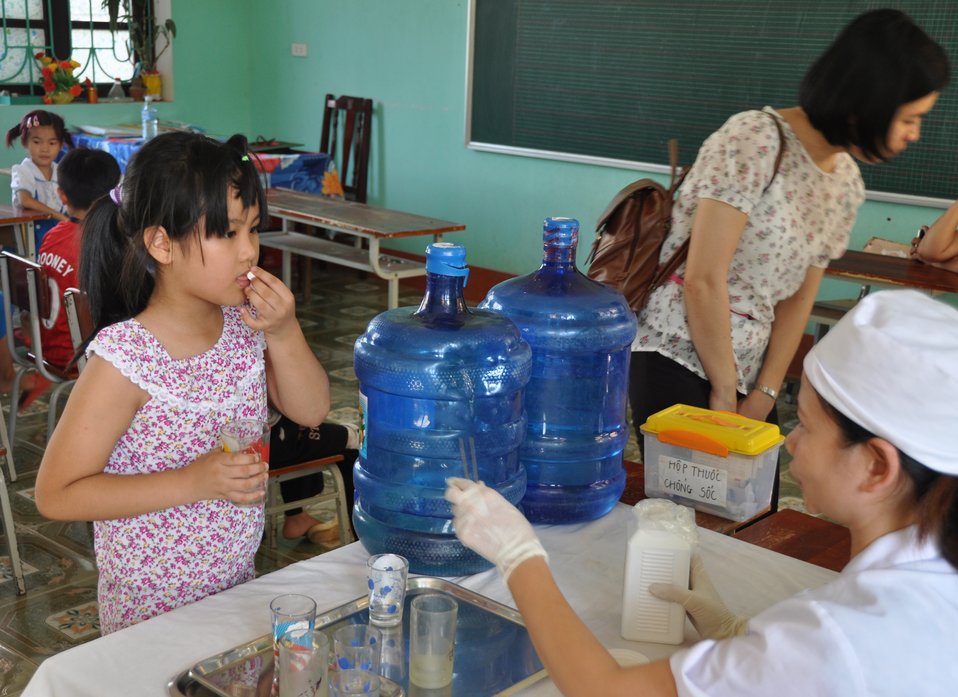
USAID supports deworming education and medication distribution in Bac Giang Province

May 20, 2013